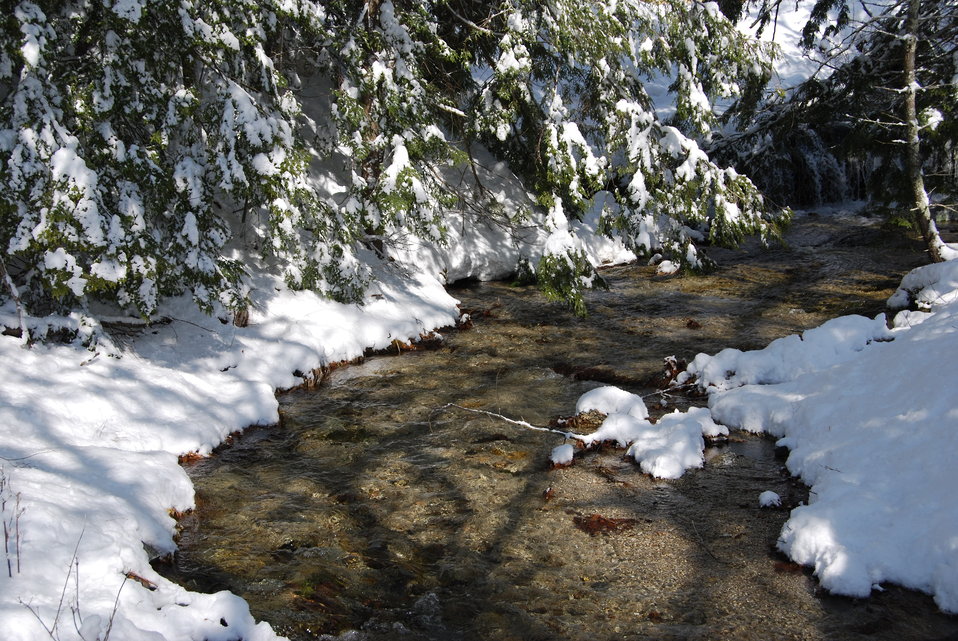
Photo of the Week - Fresh Fallen Snow (ME)

Photo of the Week 12/31/12

Fresh fallen snow photographed at Craig Brook National Fish Hatchery in East Orland, ME.